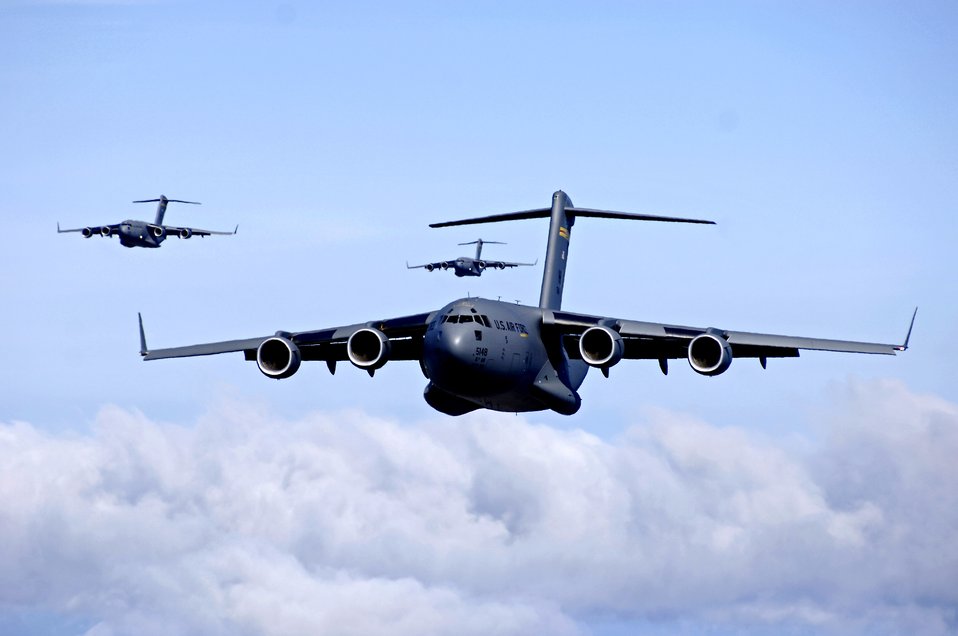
C-17s provide intra-theater airlift support

U.S. Air Force C-17s like these provided intra-theater heavy airlift support, helping to sustain operations throughout Afghanistan, Iraq and the Horn of Africa.